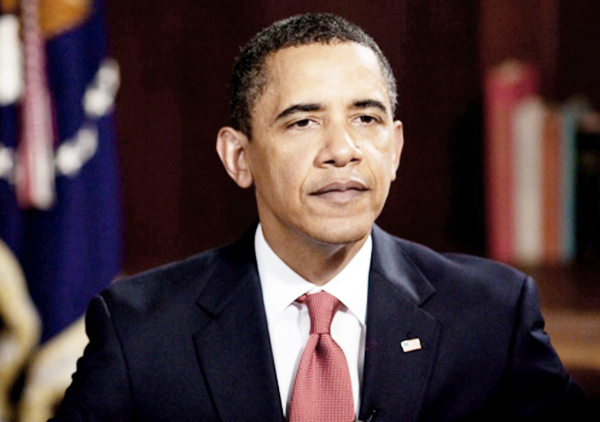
Obama condemns terrorists, reaffirms U.S. resolve

President Barack Obama delivers his first weekly address of 2010 Jan. 2. The president spoke from Kailua, Hawaii, condemning the attempted Dec. 25 terrorist attack by Umar Farouk Abdulmutallab.